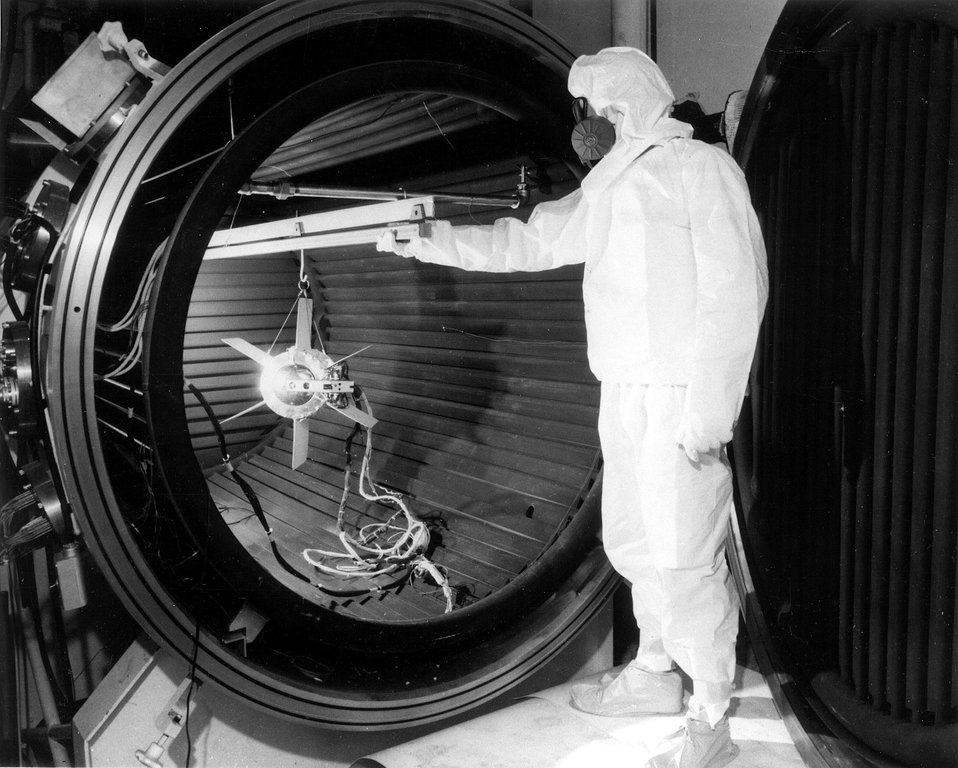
Loading of the SNAP-11 generator in the lunar simulation chamber. Circa 1967.